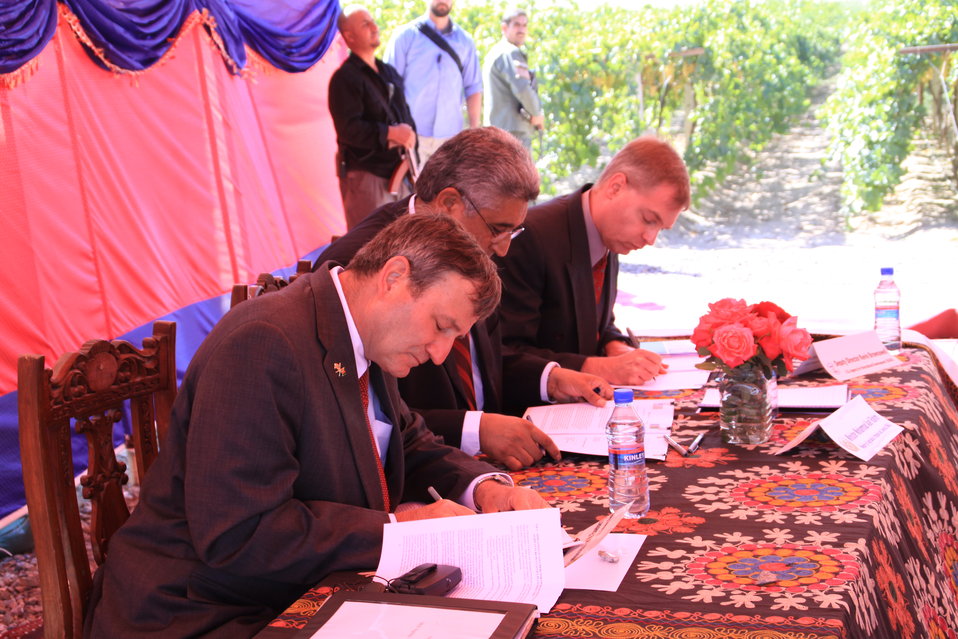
AVIPA Plus Wheat Seed Distribution 101005

US Ambassador Karl Eikenberry and USAID Acting Mission Director Kevin Brownawell joined the Minister of Agriculture, Irrigation and Livestock, H.E. Minister Mohammed Rahimi in signing a Memorandum of Understanding and distributing vouchers to area farmers for wheat and fertilizer.

US Ambassador Karl Eikenberry and USAID Acting Mission Director Kevin Brownawell joined the Minister of Agriculture, Irrigation and Livestock, H.E. Minister Mohammed Rahimi in signing a Memorandum of Understanding and distributing vouchers to area farmers for wheat and fertilizer.